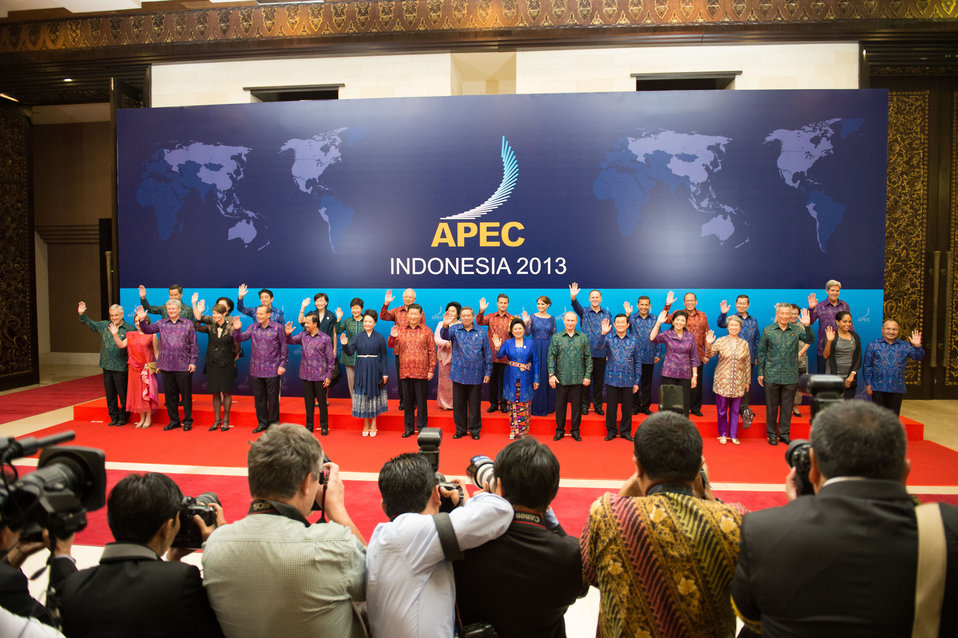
Secretary Kerry Poses With APEC Leaders

U.S. Secretary of State John Kerry poses for a photo before the Asia-Pacific Economic Cooperation (APEC) Leaders' Official Dinner in Bali, Indonesia, on October 7, 2013.